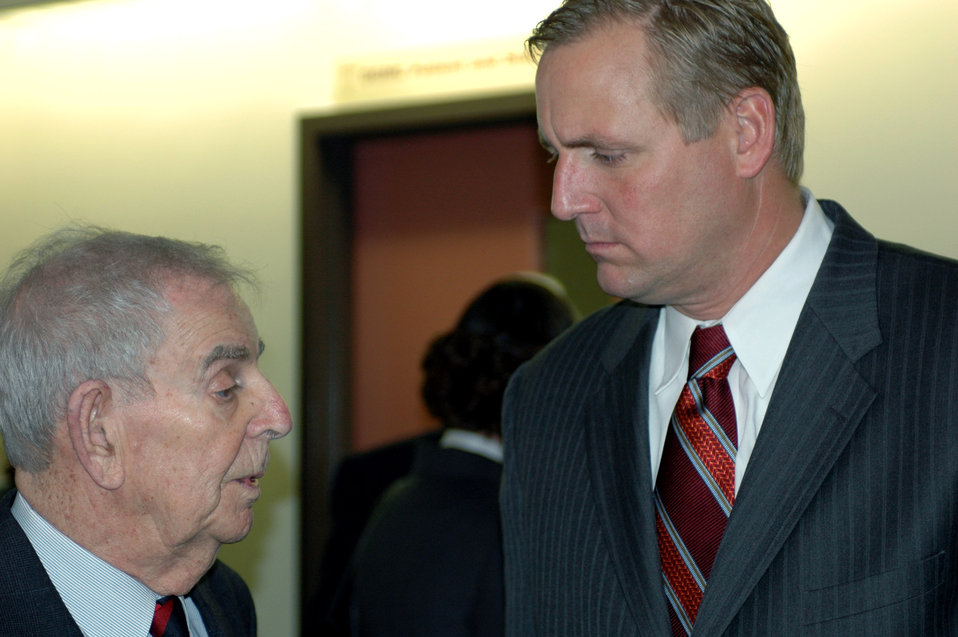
Travis medical center recognized by California legislature

Retired Col. Art Krause, speaks with California State Senator Jeff Denham, (R-Merced), March 1 at the David Grant USAF Medical Center. The senator was on hand to present California Senate Concurrent Resolution 122. The resolution was the result of Colonel Krause's desire to see DGMC recognized for the contributions it has made to world peace, America's freedom and the way of life enjoyed by the people of the state of California.